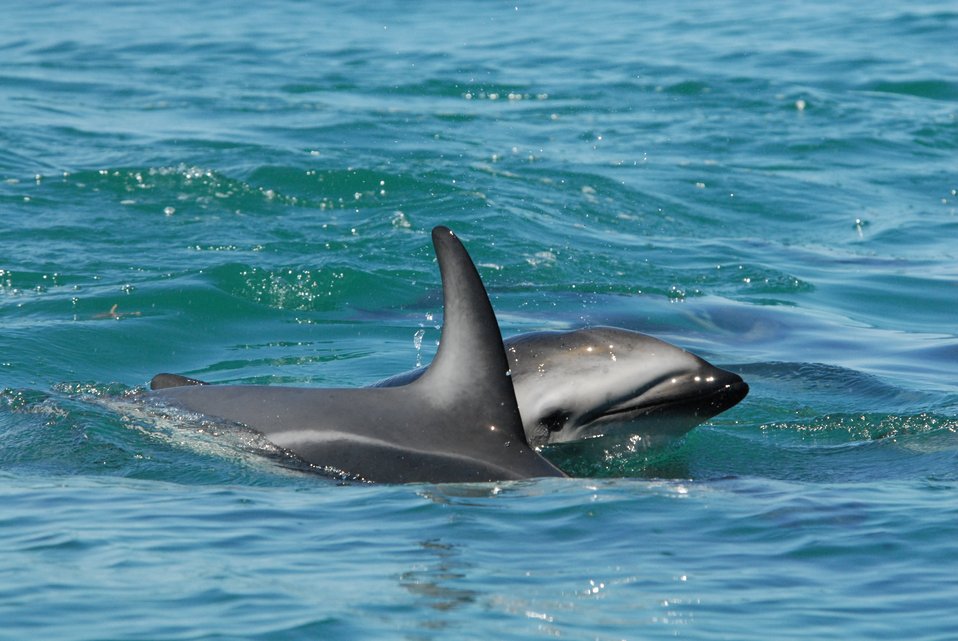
Dusky dolphin (Lagenorhynchus obscurus)